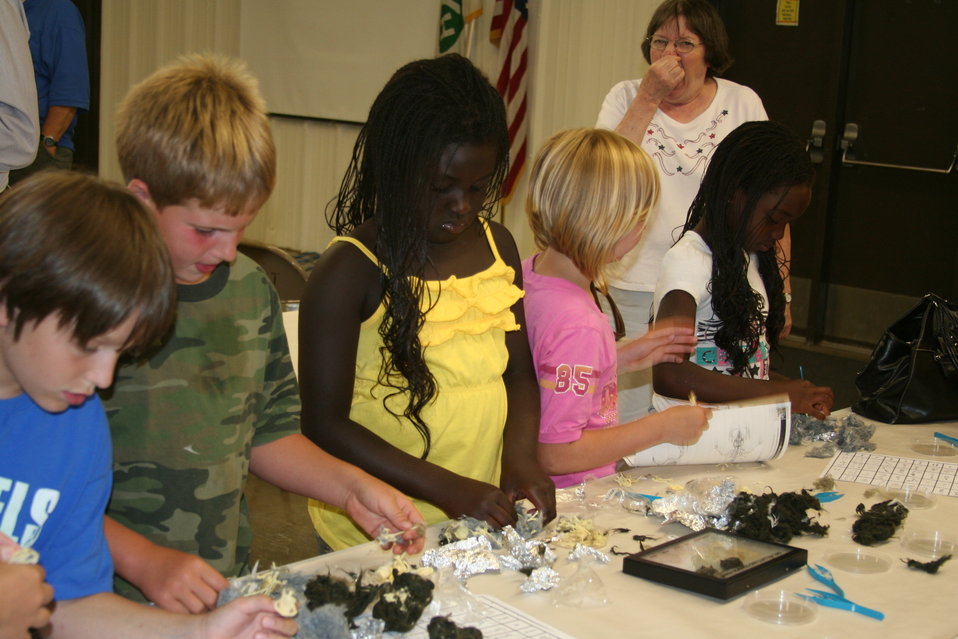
Creatures of the Night 2011